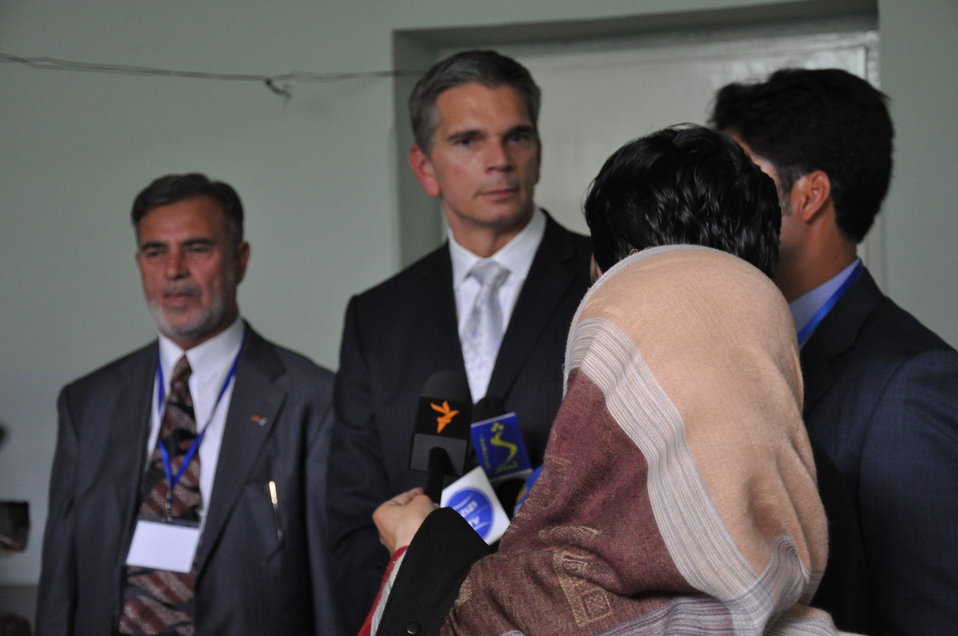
Kabul University Herbarium